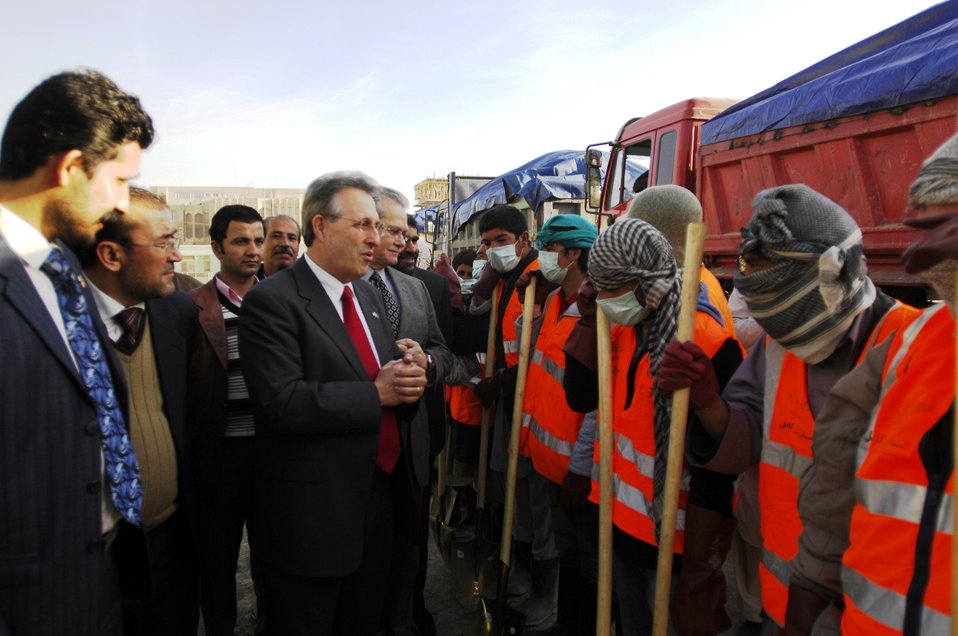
Care36